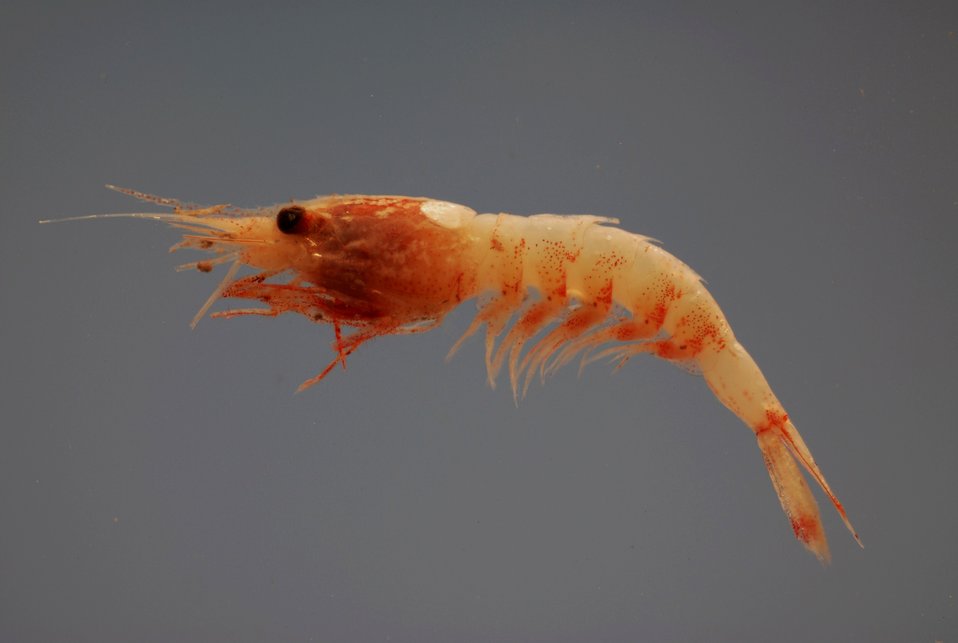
A deepsea shrimp ( Janicella spinicauda )